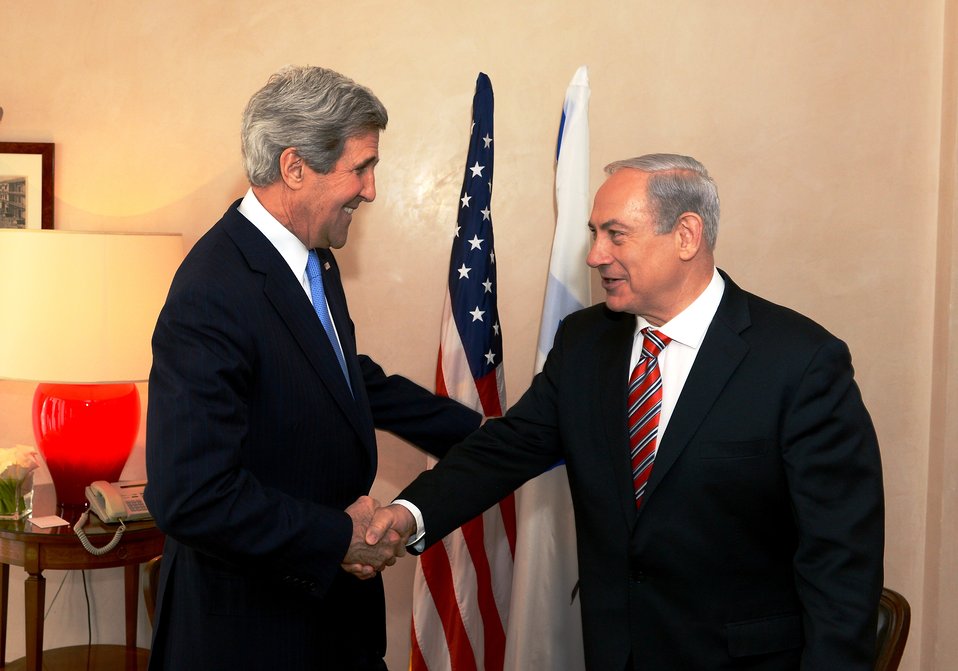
Secretary Kerry Meets With Israeli Prime Minister Netanyahu

U.S. Secretary of State John Kerry meets with Israeli Prime Minister Benjamin Netanyahu in Jerusalem on April 9, 2013.